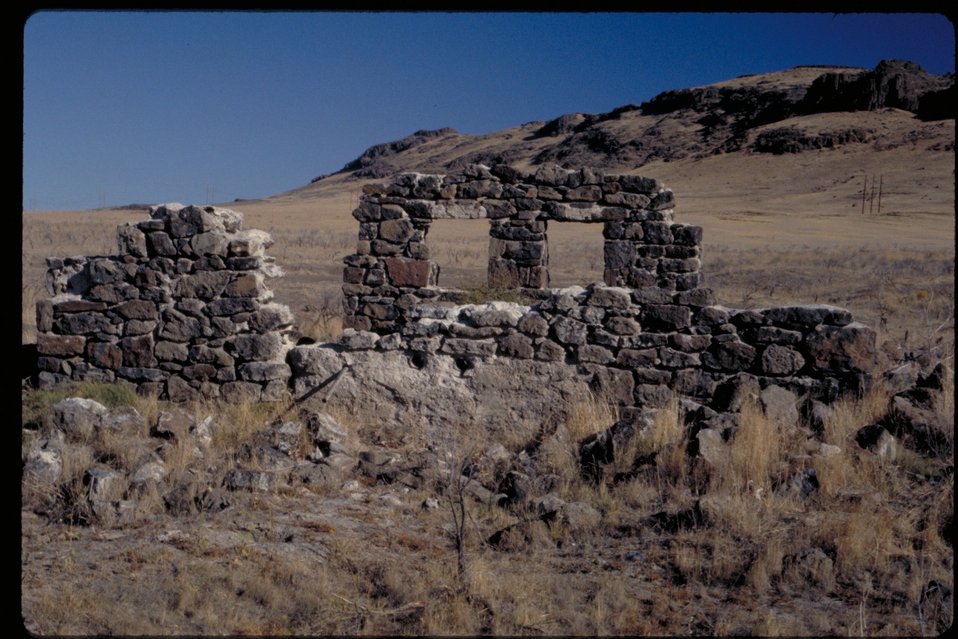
Oregon Trail Hot Springs near Teapot Dome Lower Snake River District